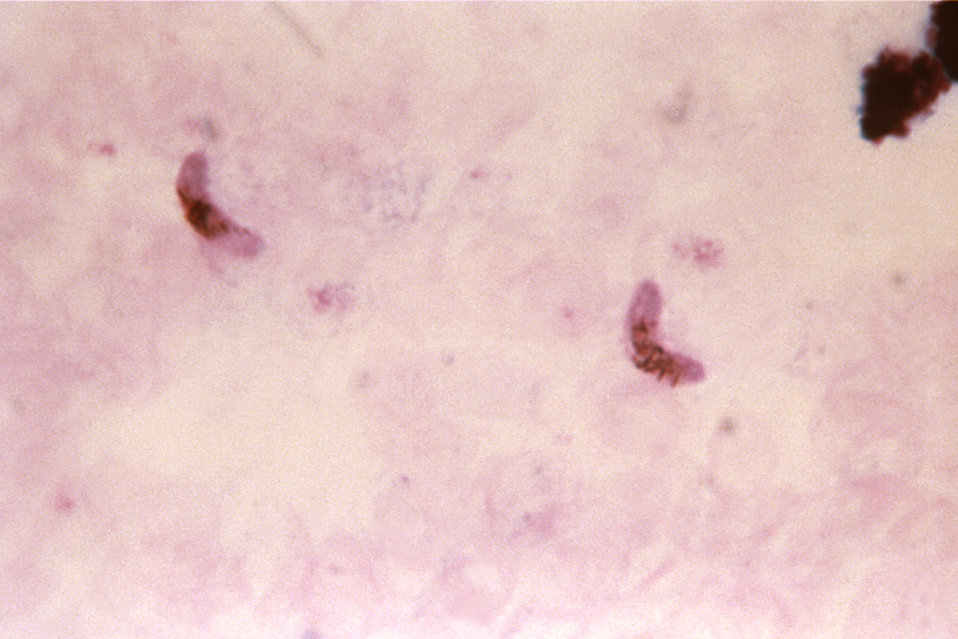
Note the pinkish, elongated Plasmodium falciparum gametocytes in the field of this thick film micrograph.